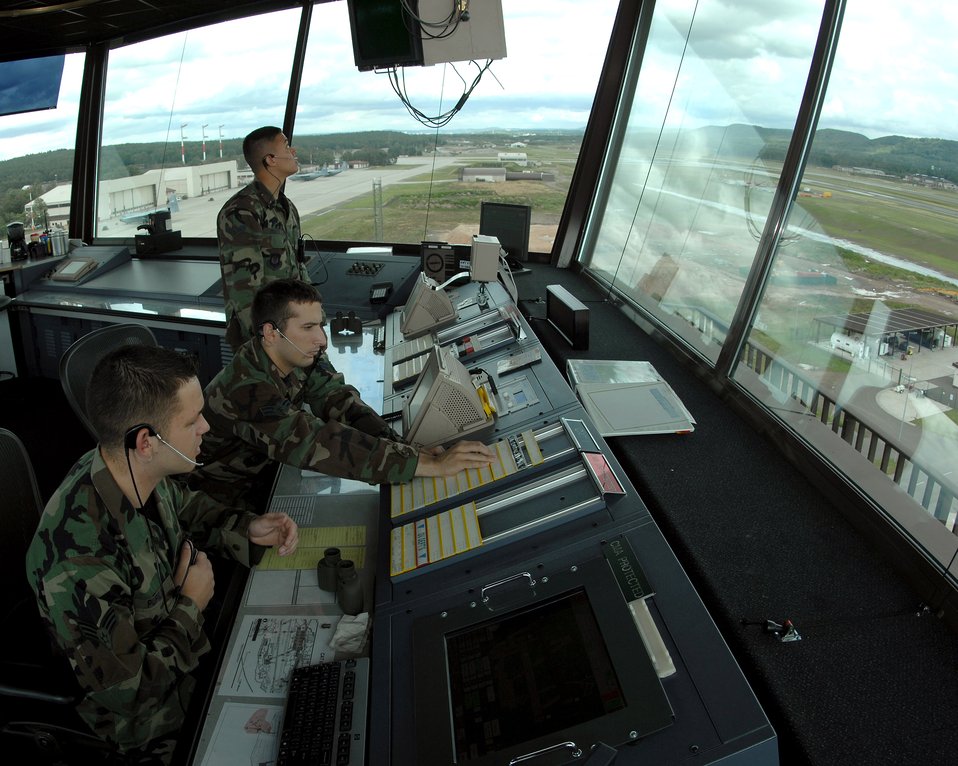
Guidance from above

Senior Airman Robert Pupilis (left to right), Airman 1st Class Toby Jacob and Airman 1st Class Earl Pruett work ensure all inbound and outbound aircraft arrive and depart safely June 26 from the control tower at Ramstein Air Base, Germany. The Airmen are assigned to the 86th Operations Support Squadron.